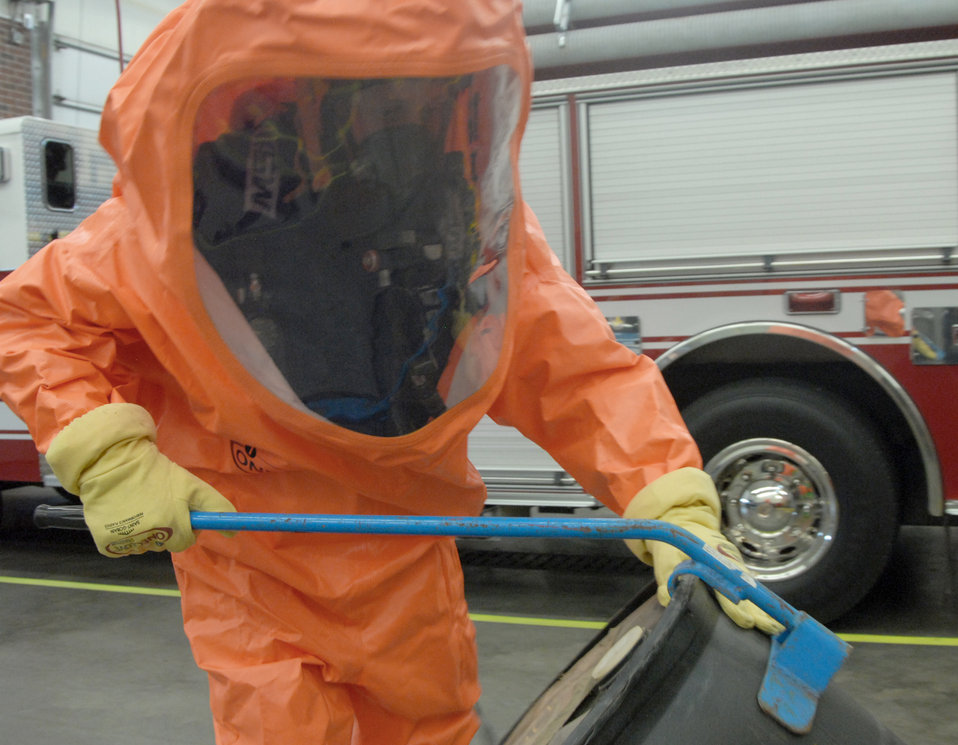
IDEA saves Air Force cash

Justin Kammer uses a drum tool to lift a 55-gallon drum during a demonstration Jan. 10, 2011. He is wearing a new